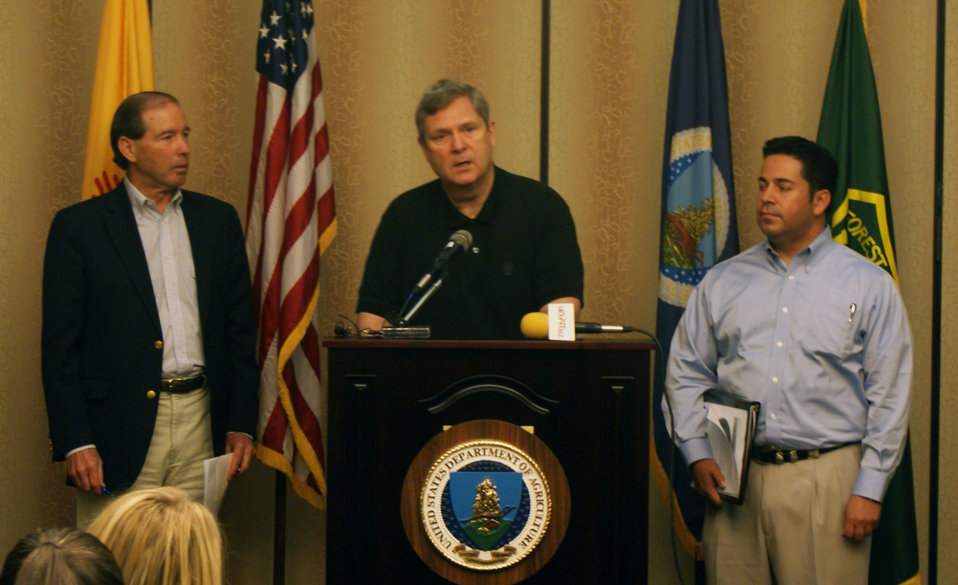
Agriculture Secretary Tom Vilsack takes questions on the New Mexico and Arizona fire situation in Albuquerque, NM, on Wednesday, June 29, 2011.